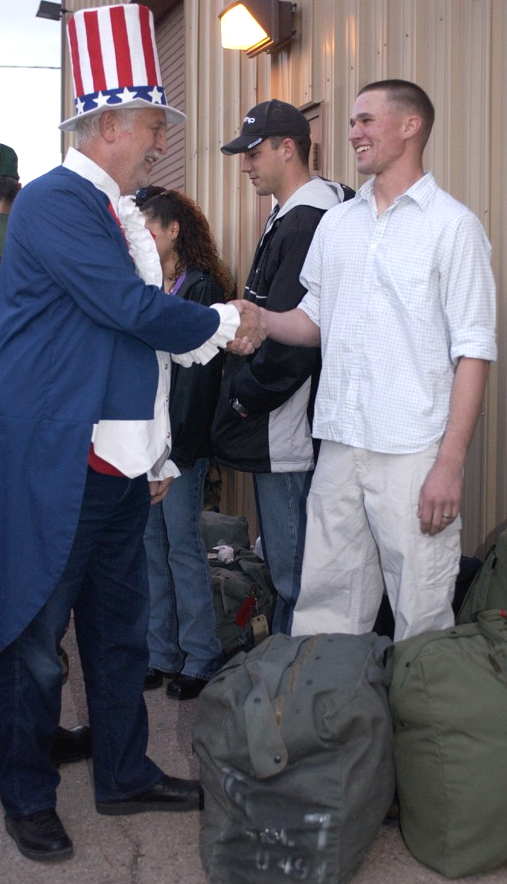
Uncle Sam thanks you

HOLLOMAN AIR FORCE BASE, N.M. -- Uncle Sam shakes hands with Airman Kyle Regan before he and more than 20 49th Civil Engineer Squadron airmen here deploy to support Operation Enduring Freedom on Feb. 13. Uncle Sam is Chuck Harris, a member of the nearby town of Alamogordo's Community Action Rapid Response Team that shows support for deploying Holloman people.